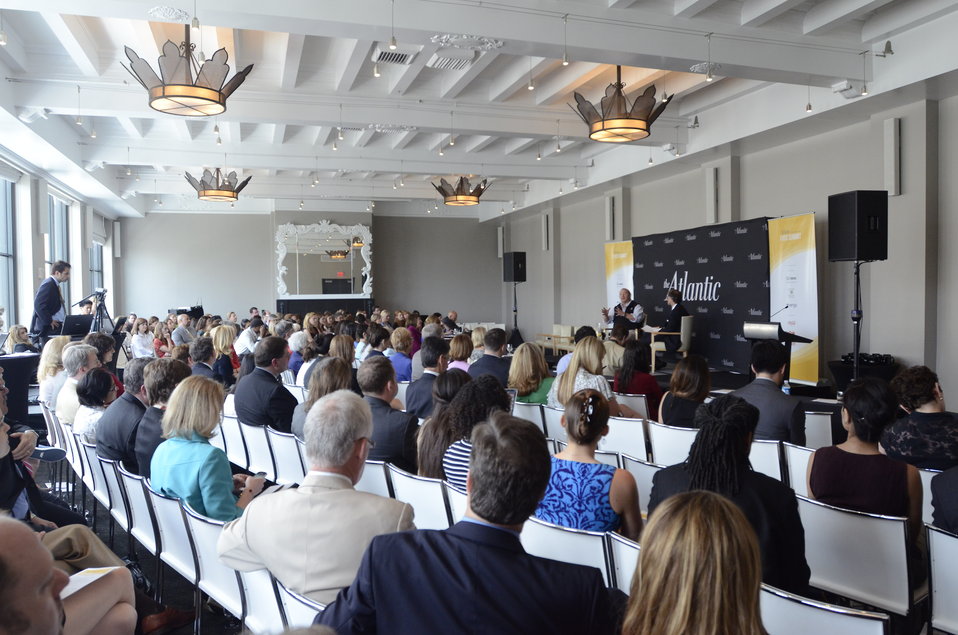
The Atlantic Senior Editor Corby Kummer interviews Chef, restaurateur, author, and television personality Mario Batali at the 3rd Annual Food Summit held at the W Hotel in Washignton, D.C. on Thursday, May 24, 2012. The Food Summit event includes interviews, panel discussions and symposia with leading authorities on issues related to food, food security, and nutrition.